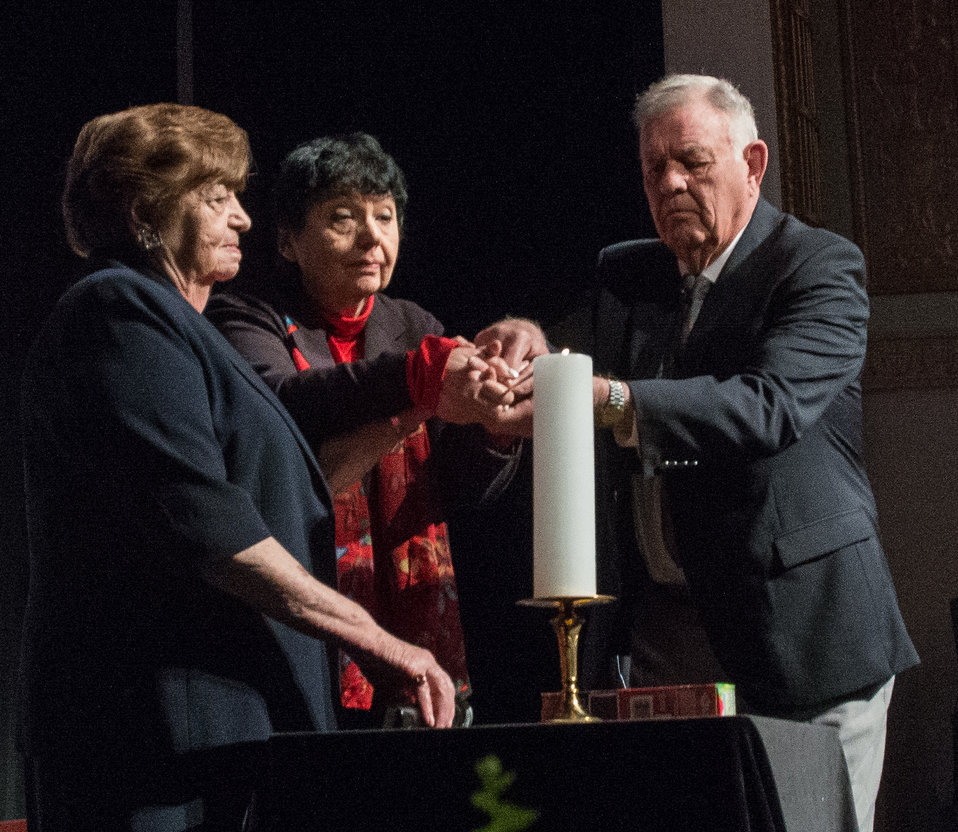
Theresienstadt Concentration Camp Czech Jewish Holocaust Survivor Ela Stein-Weissberger, German Jewish Holocaust Survivor Inge Auerbacher; and Dachau Concentration Camp Liberator Jimmy Gentry perform a candle lighting ceremony, during the 2013 Federal Inter-Agency Holocaust Remembrance Day, at the Lincoln Theater, on Wednesday, April 17, 2013, in Washington, D.C. They each took turns making comments after the candle was lit. Since the 1979 President’s Commission on the Holocaust, an annual proclamation signed by the President of the United States recognizes the importance of remembering the atrocities of the Holocaust that should never be forgotten or be ignored.